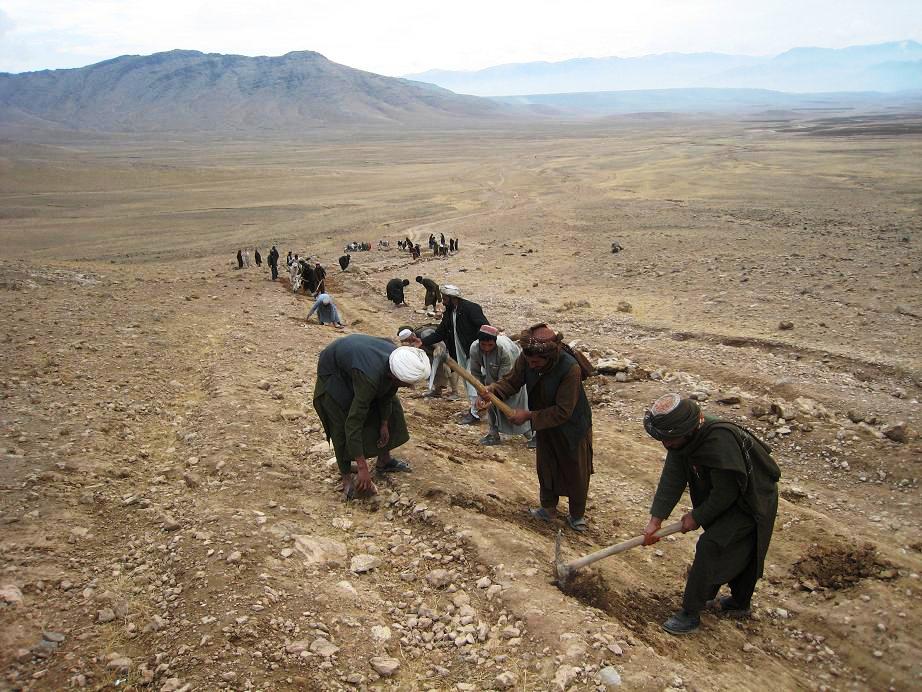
lower section